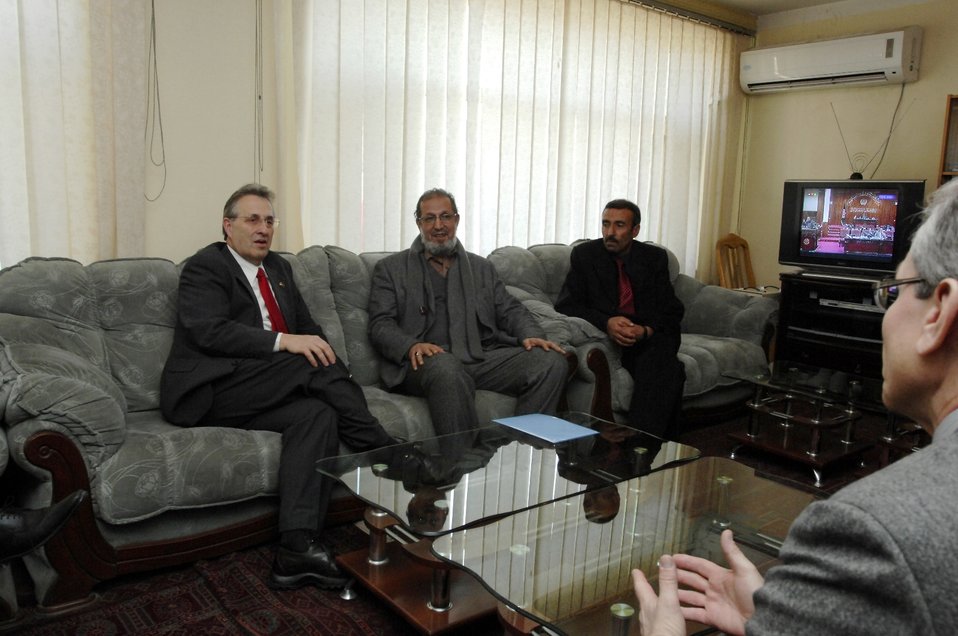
Care99 (1)